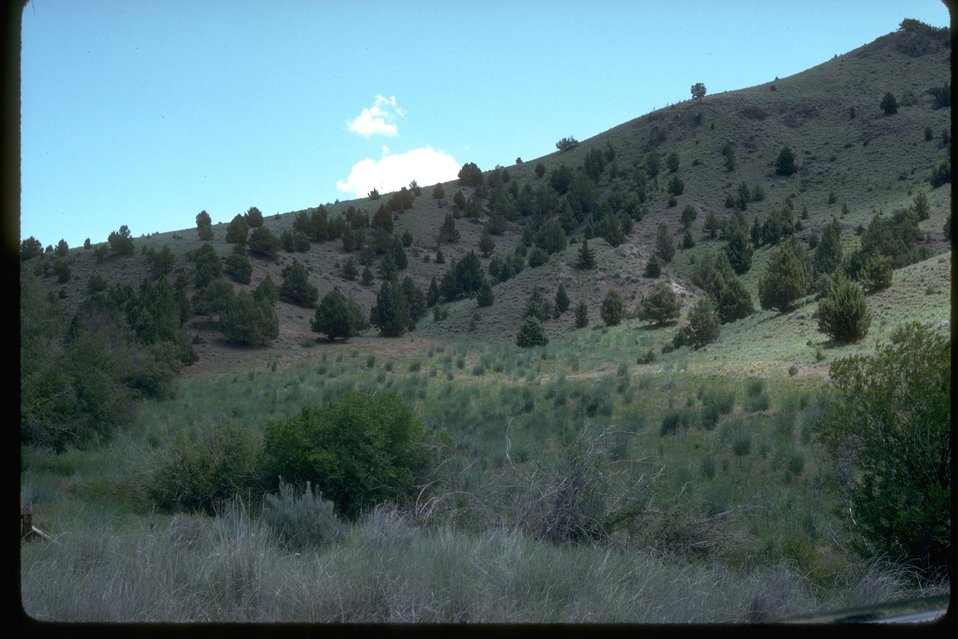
Basin wild rye in upland setting of central Oregon.